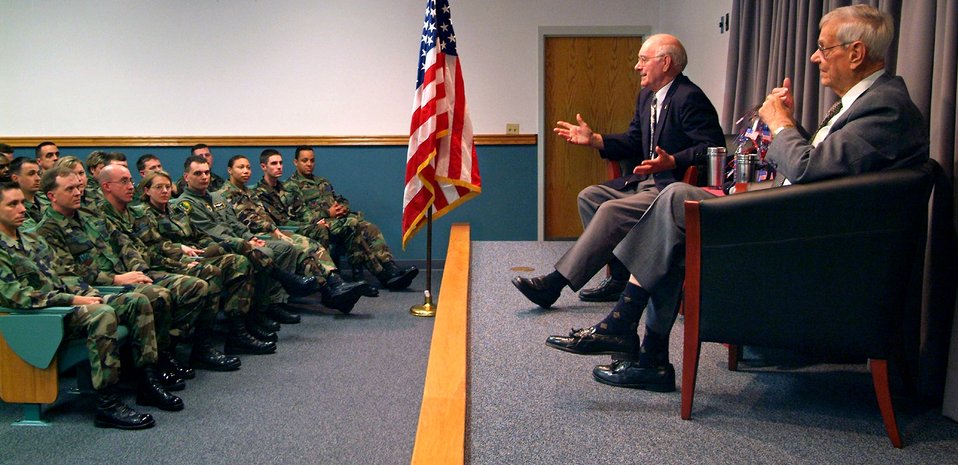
Two former top Air Force Chiefs visit Keesler Airmen

Former Chief Master Sergeants of the Air Force Sam Parish, left, and Paul Airey field questions March 2 from Airmen during a visit to Keesler Air Force Base, Miss. Chief Airey, the first chief master sergeant of the Air Force, was a first sergeant assigned to Keesler in the mid-1950s. Chief Parish was the eighth chief master sergeant of the Air Force.